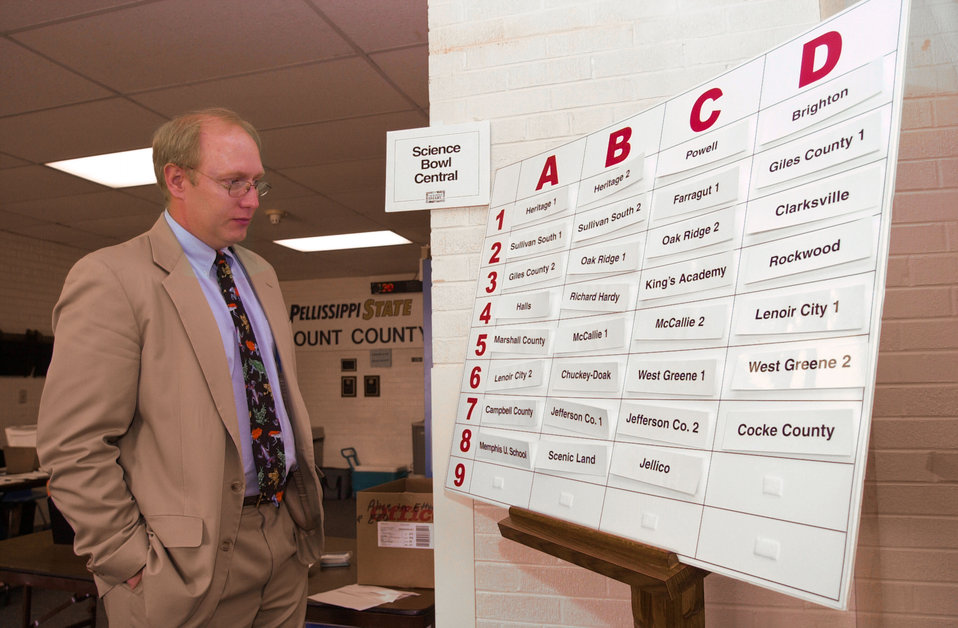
DOE Science Bowl Pellissippi State

00-0020-063 DOE photo by Lynn Freeny
DOE Science Bowl Pellissippi State Maryville Tennessee Feb. 2000